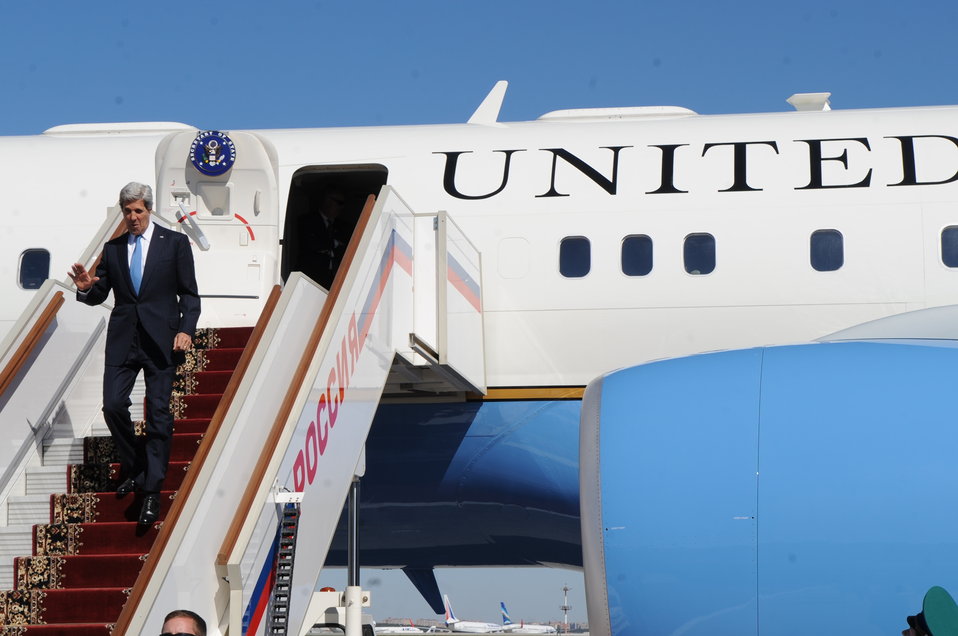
Secretary Kerry Arrives in Moscow

U.S. Secretary of State John Kerry descends from his plane at Moscow Vnukovo International Airport in Russia on May 7, 2013.